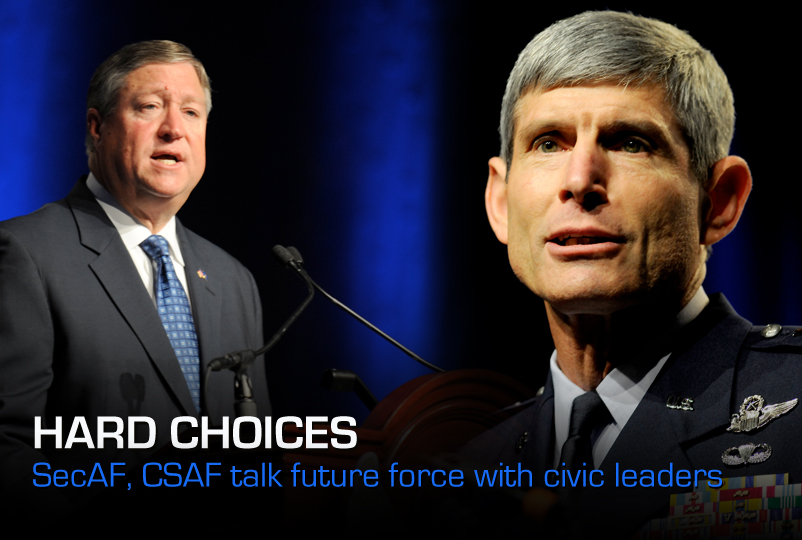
Hard Choices